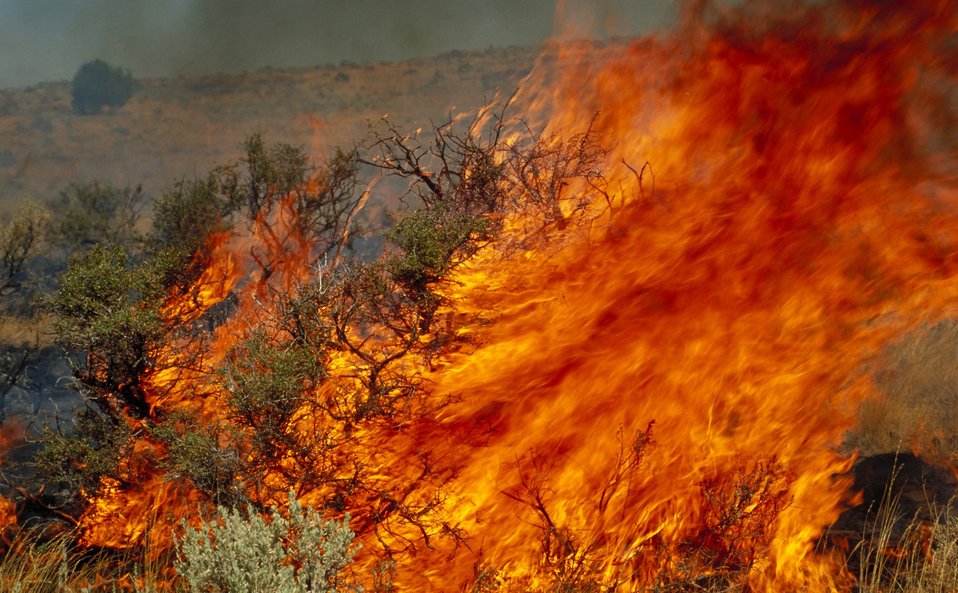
Prescribed brush burning Fire Season 2000 Lower Snake River District LSRD